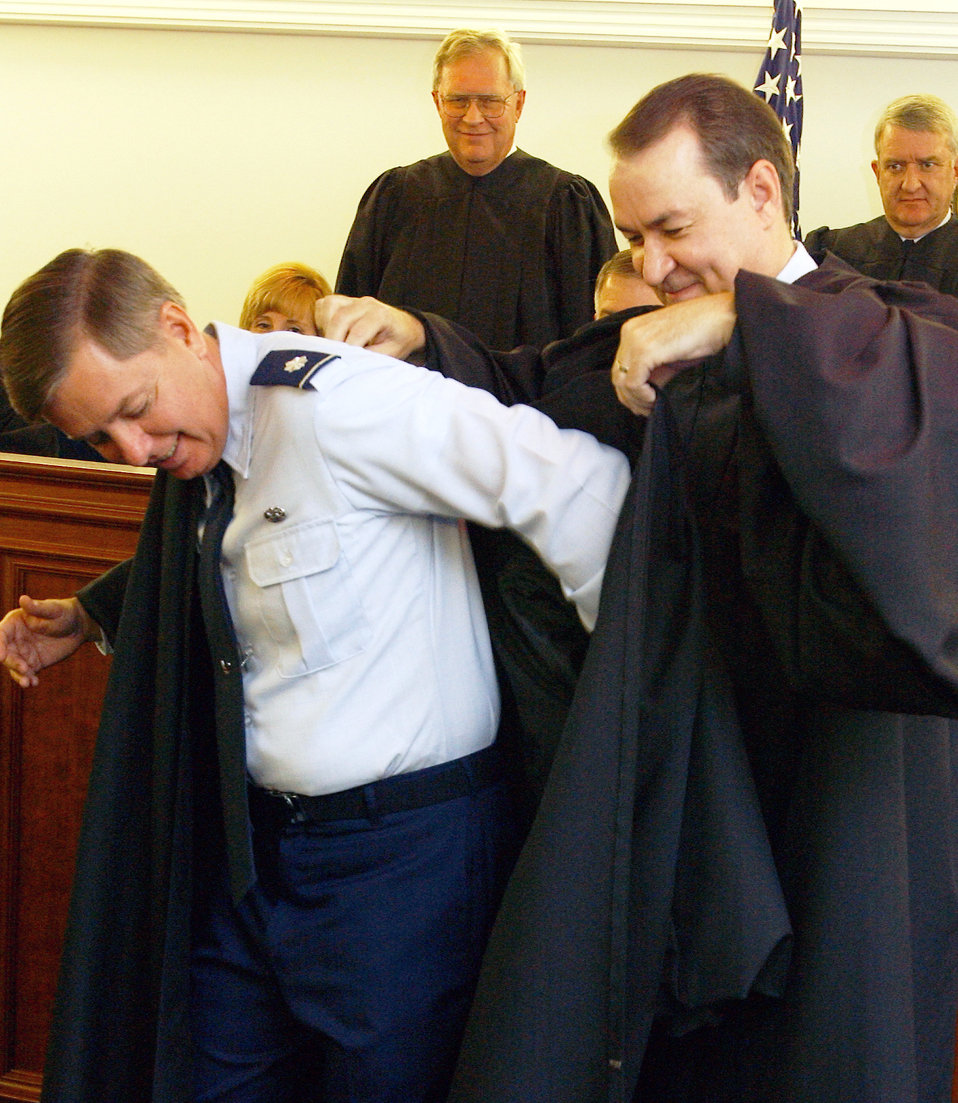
Senator becomes military judge

BOLLING AIR FORCE BASE, D.C. -- Col. James Van Orsdol (right) helps Lt. Col. Lindsey Graham don a judge's robe in a courtroom here Nov. 4, after Graham was sworn in as a new judge for the Air Force Court of Criminal Appeals. Graham, an Air Force reservist, is a U.S. senator from South Carolina in civilian life. Van Orsdol is a former chief judge for the court.